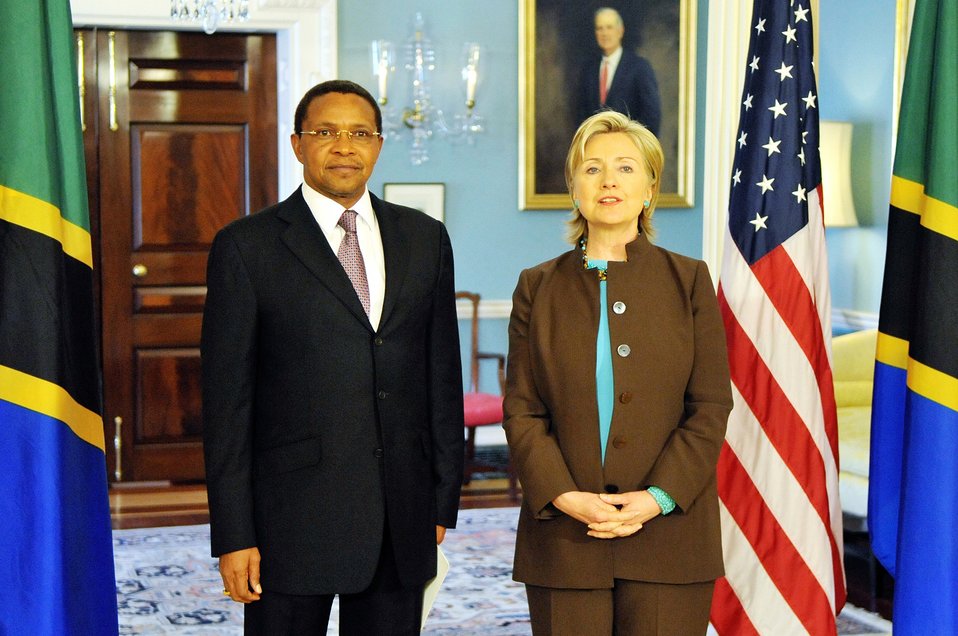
Secretary Clinton Meets With Tanzanian President

U.S. Secretary of State Hillary Rodham Clinton hosts a bilateral meeting with Tanzanian President Jakaya Kikwete in the Treaty Room of the U.S. Department of State in Washington, DC May 21, 2009.